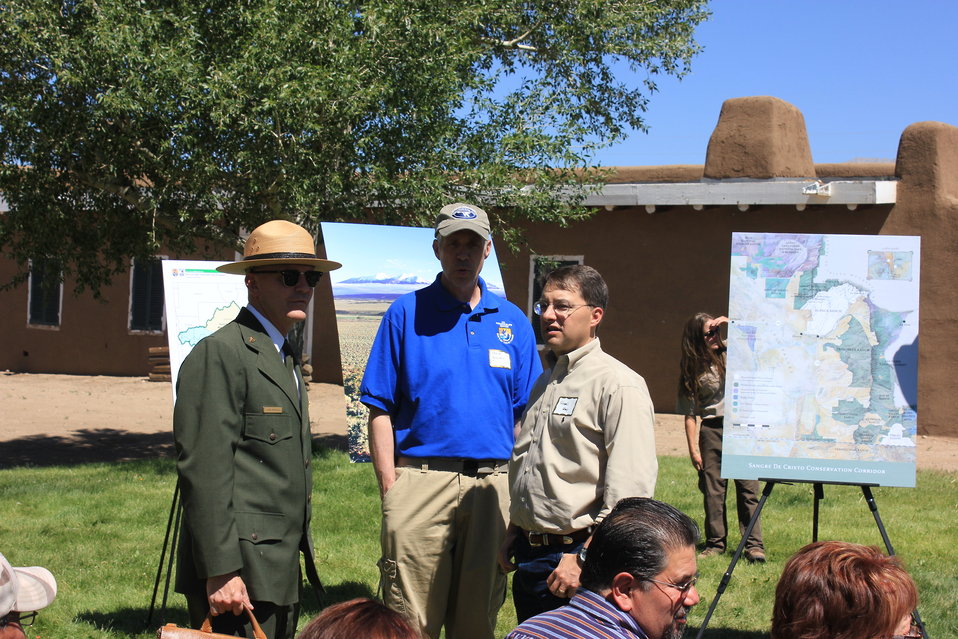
Historic Conservation Easement in Sangre de Cristo Mountains